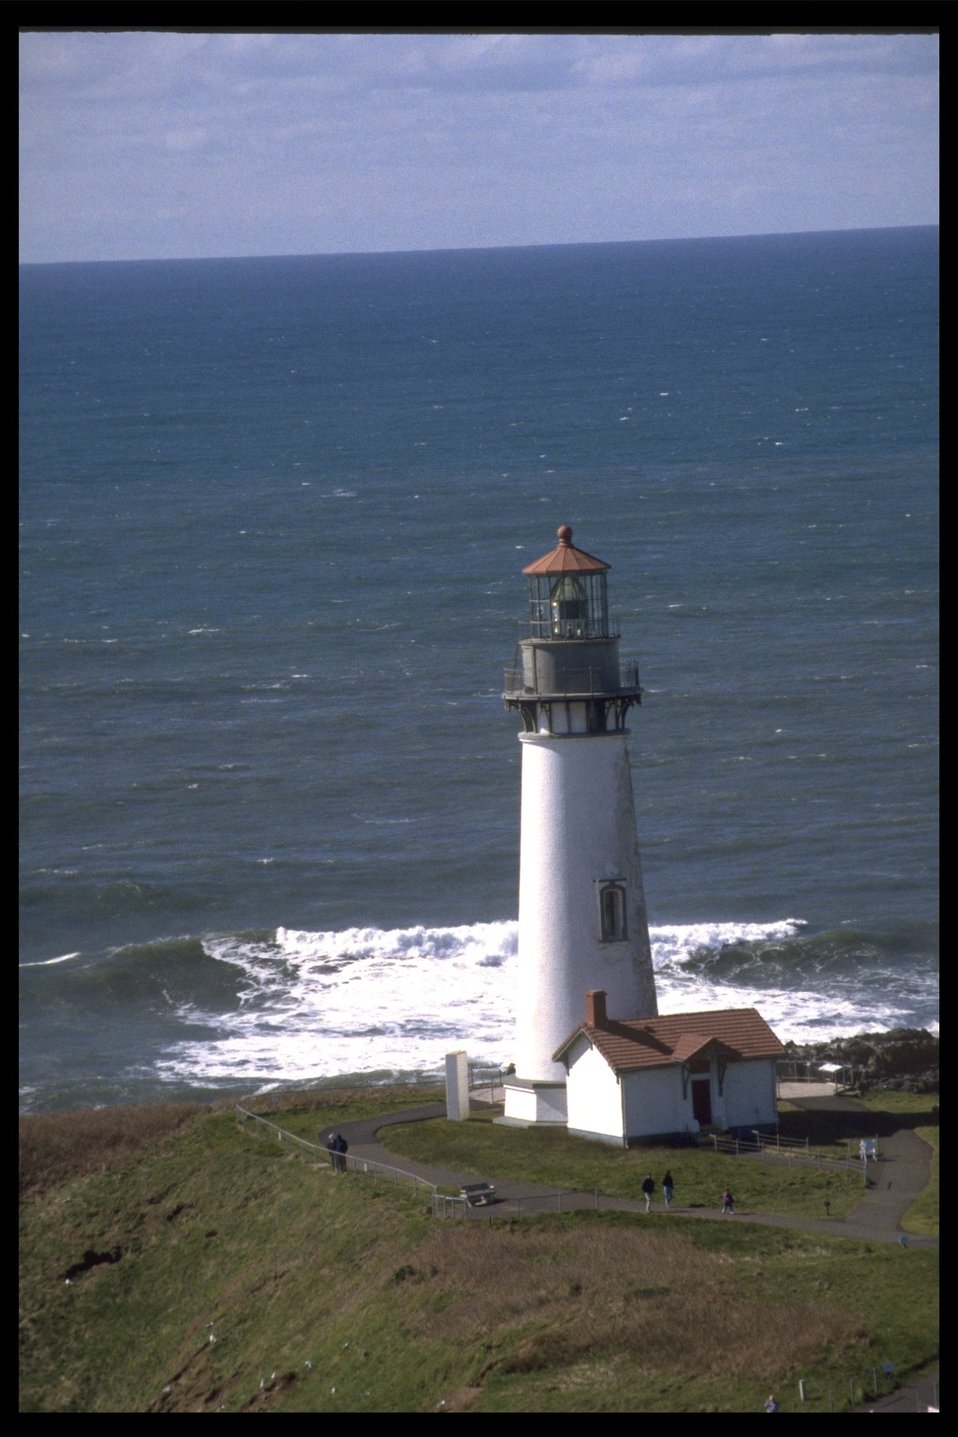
Yaquina Head Lighthouse.